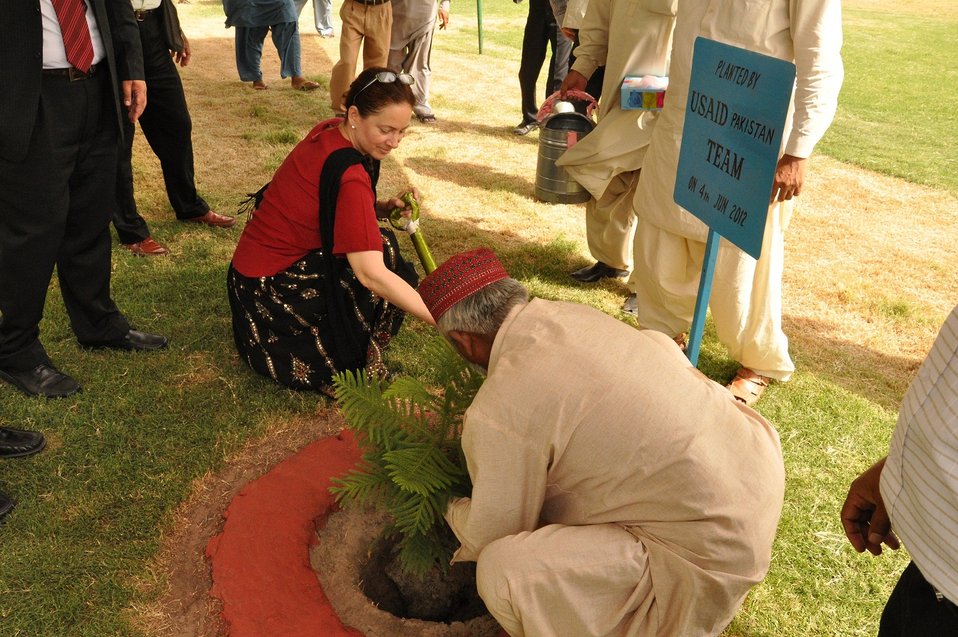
Melissa Knight, USAID Energy Office Director planting a tree at HESCO

Hyderabad, June 5, 2012: A team of USAID officials led by Ms. Melissa Knight, USAID Energy Office Director, visited Hyderabad Electric Supply Company (HESCO) to discuss the ongoing projects of USAID for HESCO and received briefing from the CEO HESCO, Muzaffar Ali Abbasi about the performance of HESCO. The projects undertaken by USAID Power Distribution Program for HESCO were also discussed and results achieved so far were presented by HESCO. The USAID team along with HESCO officials then planted a tree at HESCO employee colony.